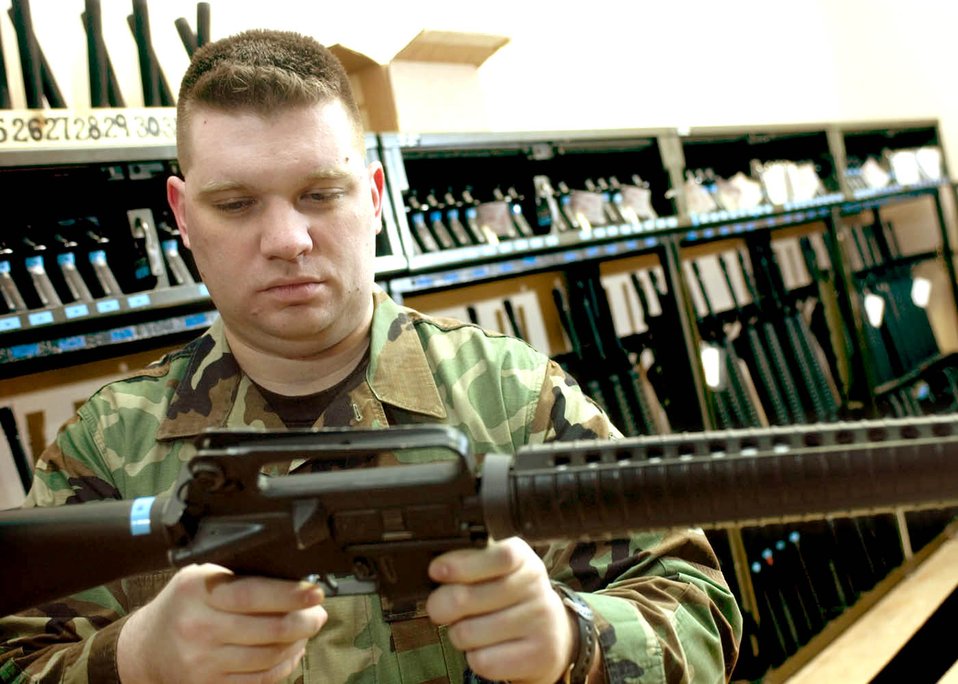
Airmen provide blanket of security

RHEIN-MAIN AIR BASE, Germany -- Staff Sgt. Tim Crincic is helping the 469th Air Base Group's security forces flight in the armory while Operations Enduring and Iraqi Freedom missions are flying from here. Sergeant Crincic is from the 435th Security Forces Squadron at nearby Ramstein Air Base.